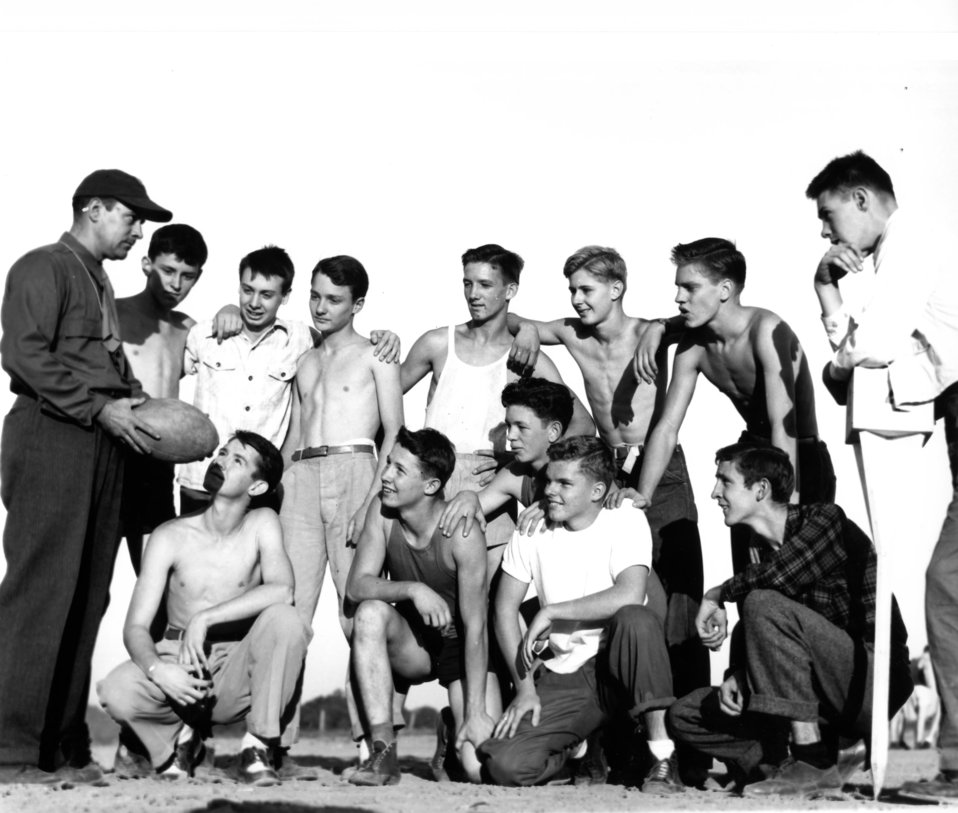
Schools at Oak Ridge